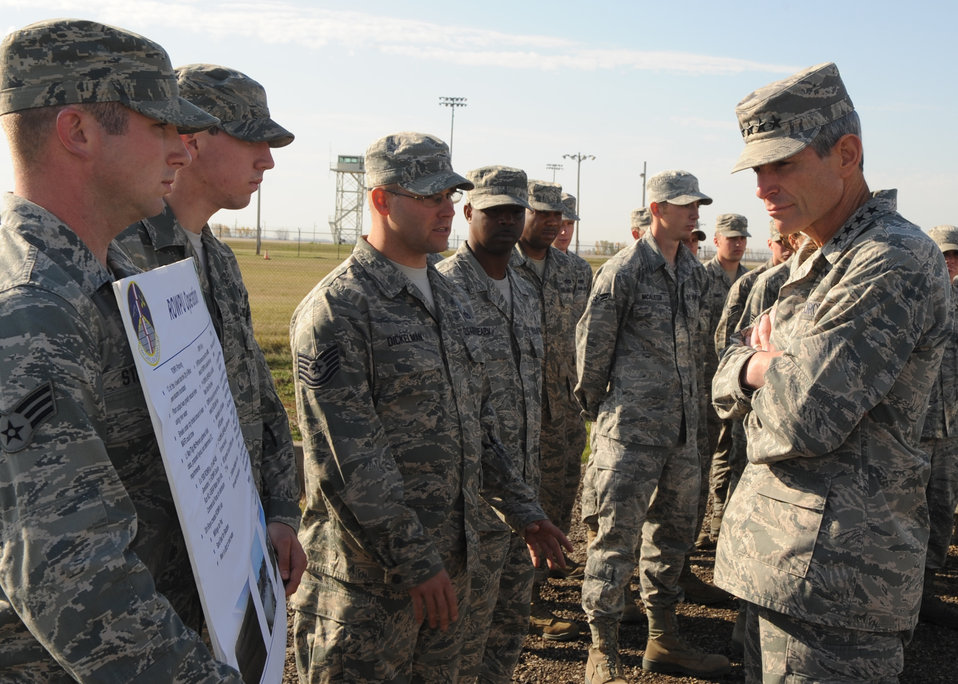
CSAF visits Minot AFB

Air Force Chief Staff Gen. Norton Schwartz speaks to Airmen Oct. 4, 2011, during a tour of Minot Air Force Base, N.D. Schwartz was briefed on the importance of the reverse osmosis water purification units during the 2011 Souris River flooding of Minot, N.D., and the surrounding communities. The Airmen are assigned to the 5th Civil Engineer Squadron.